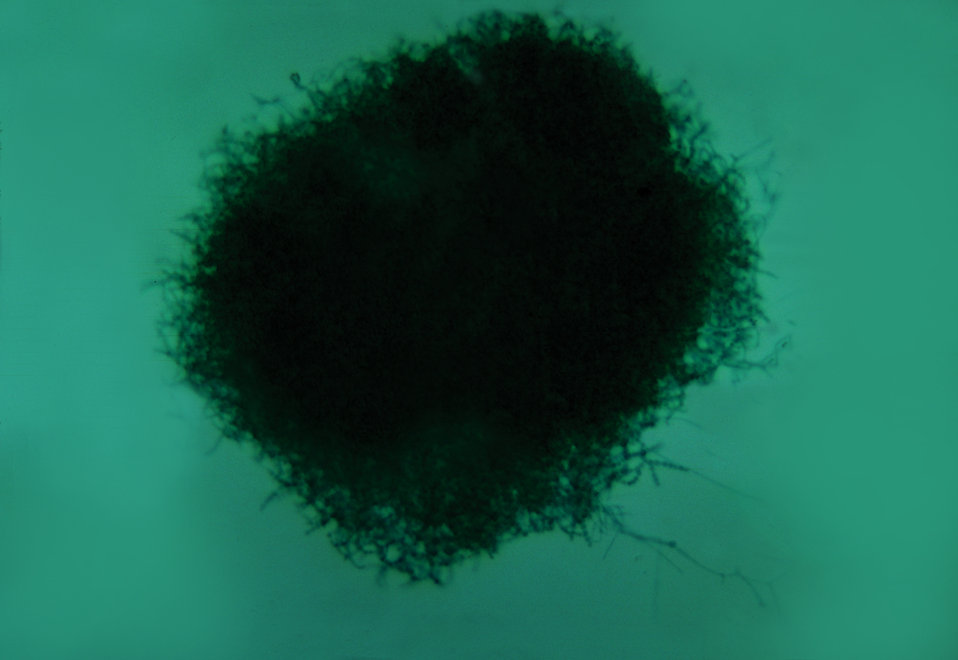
This is the closed spore-bearing cleistothecium of the fungus Trichophyton mentagrophytes.